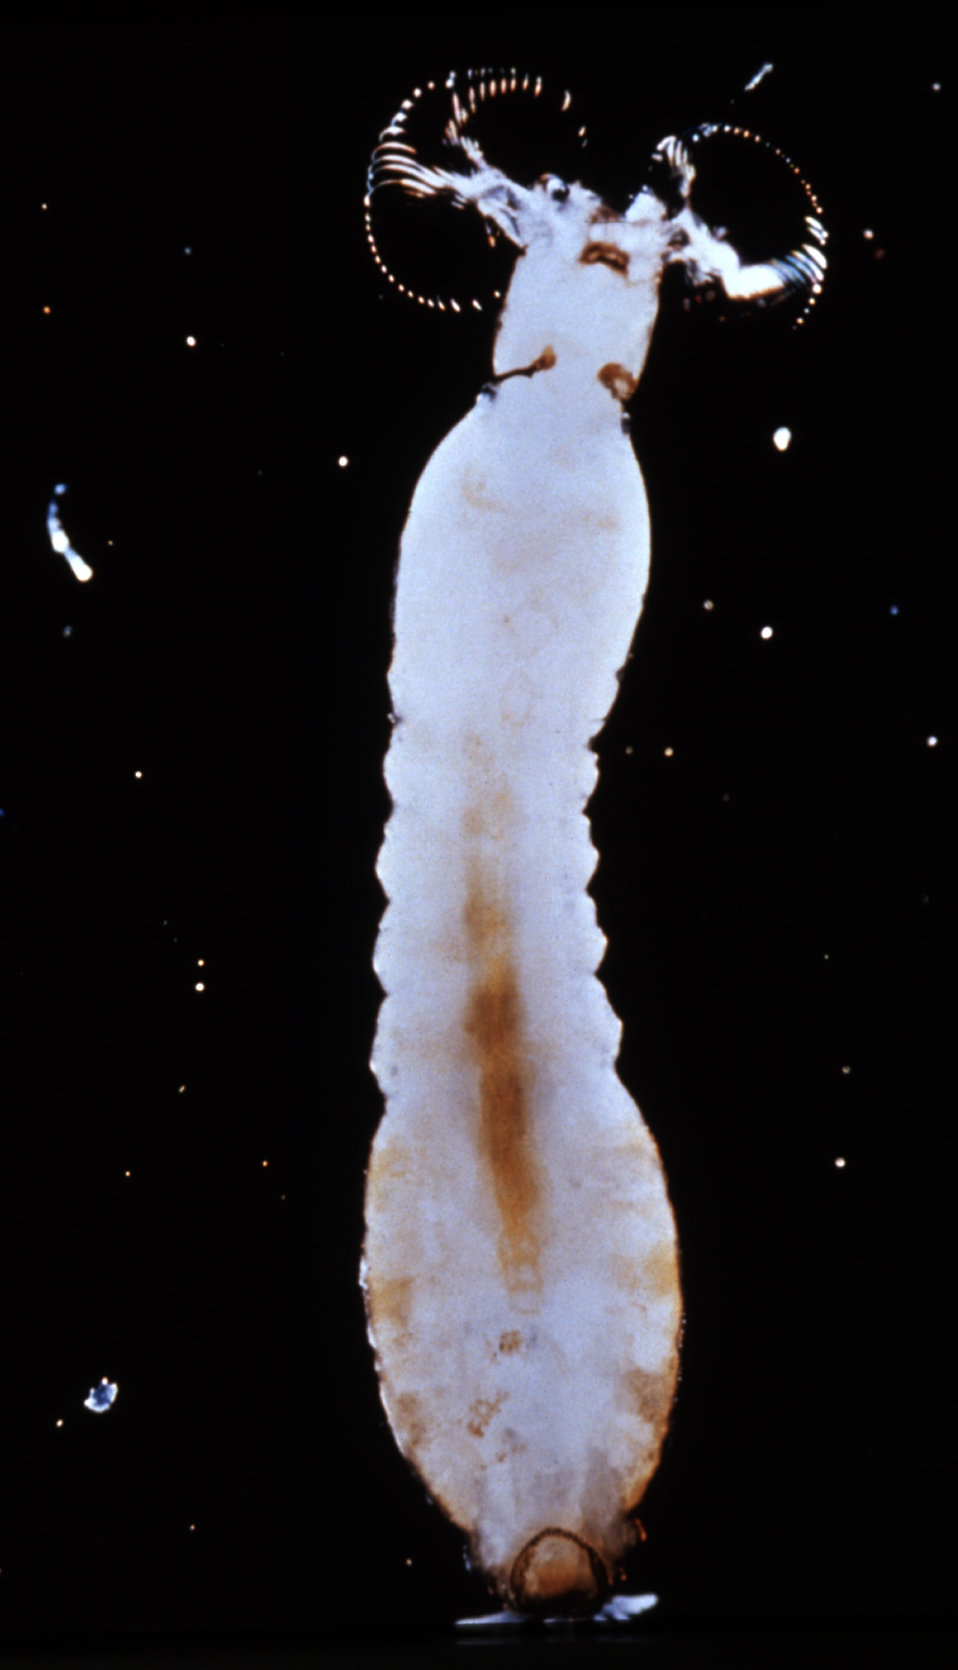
As an adult, this Simulium sp. larva, or 'black fly', is a vector of the disease, onchocerciasis, or 'river blindness'.